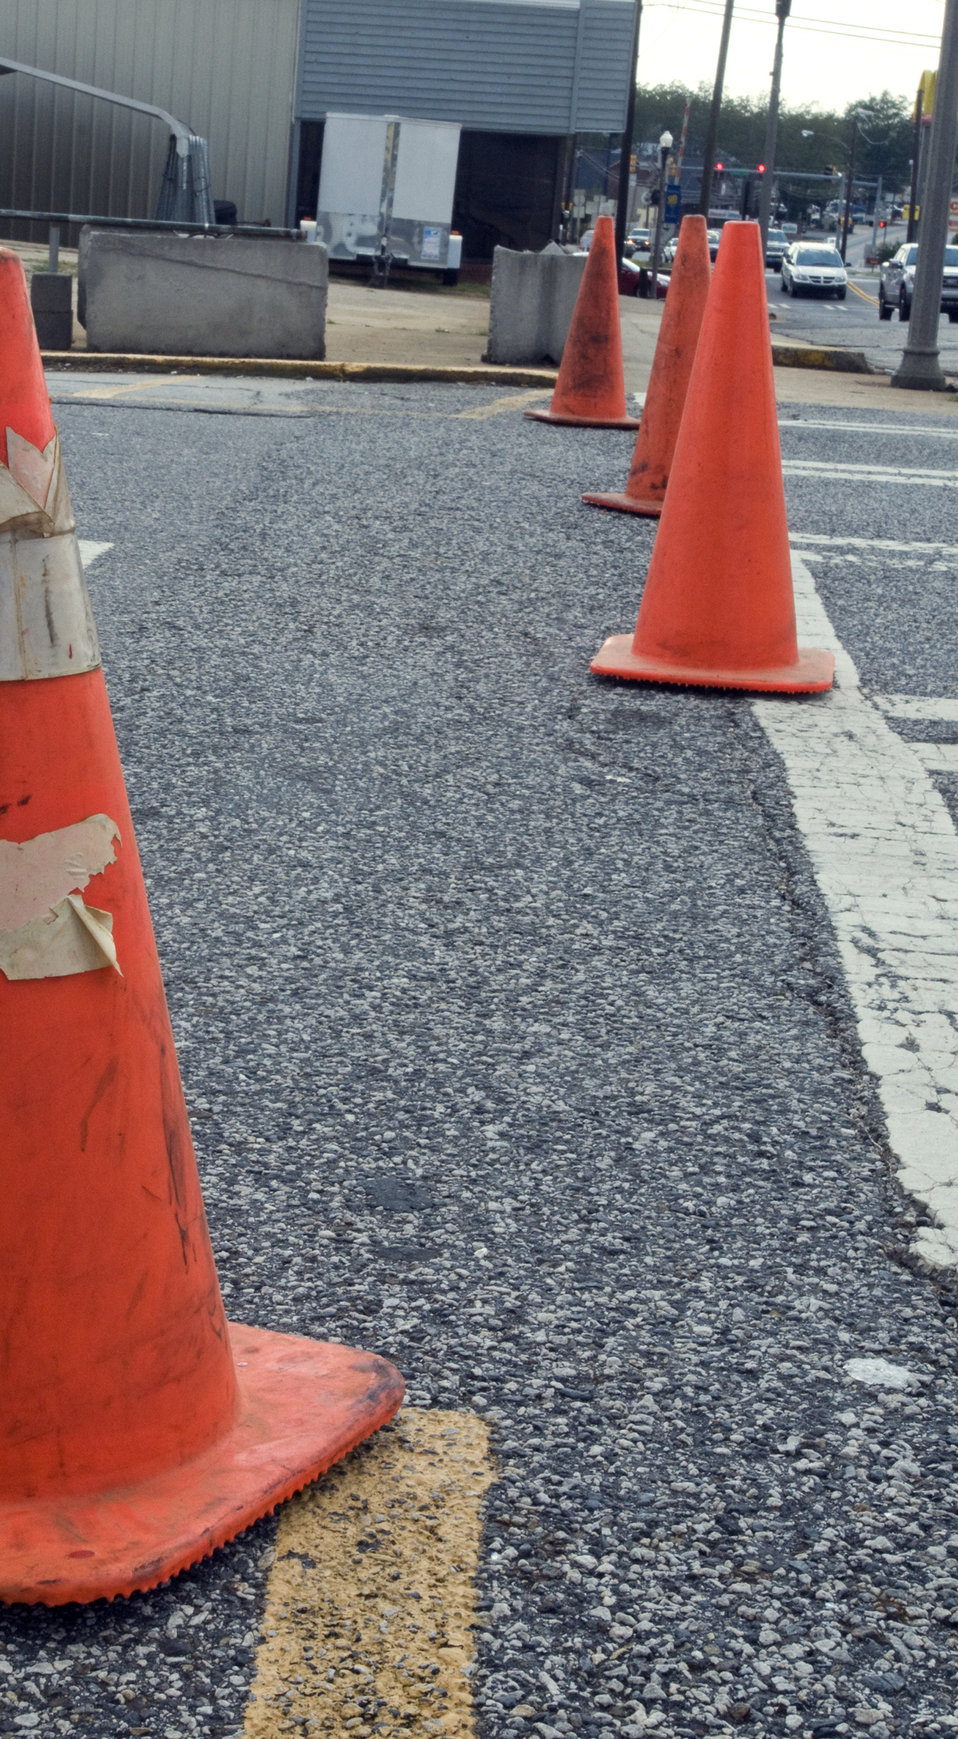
As symbols that inspire a greater level of caution and awareness, these brightly-colored orange road cones were placed in a Georgia city intersection, where some road work was taking place, and where pedestrians, motor vehicle drivers, and bicyclists should proceed with caution.